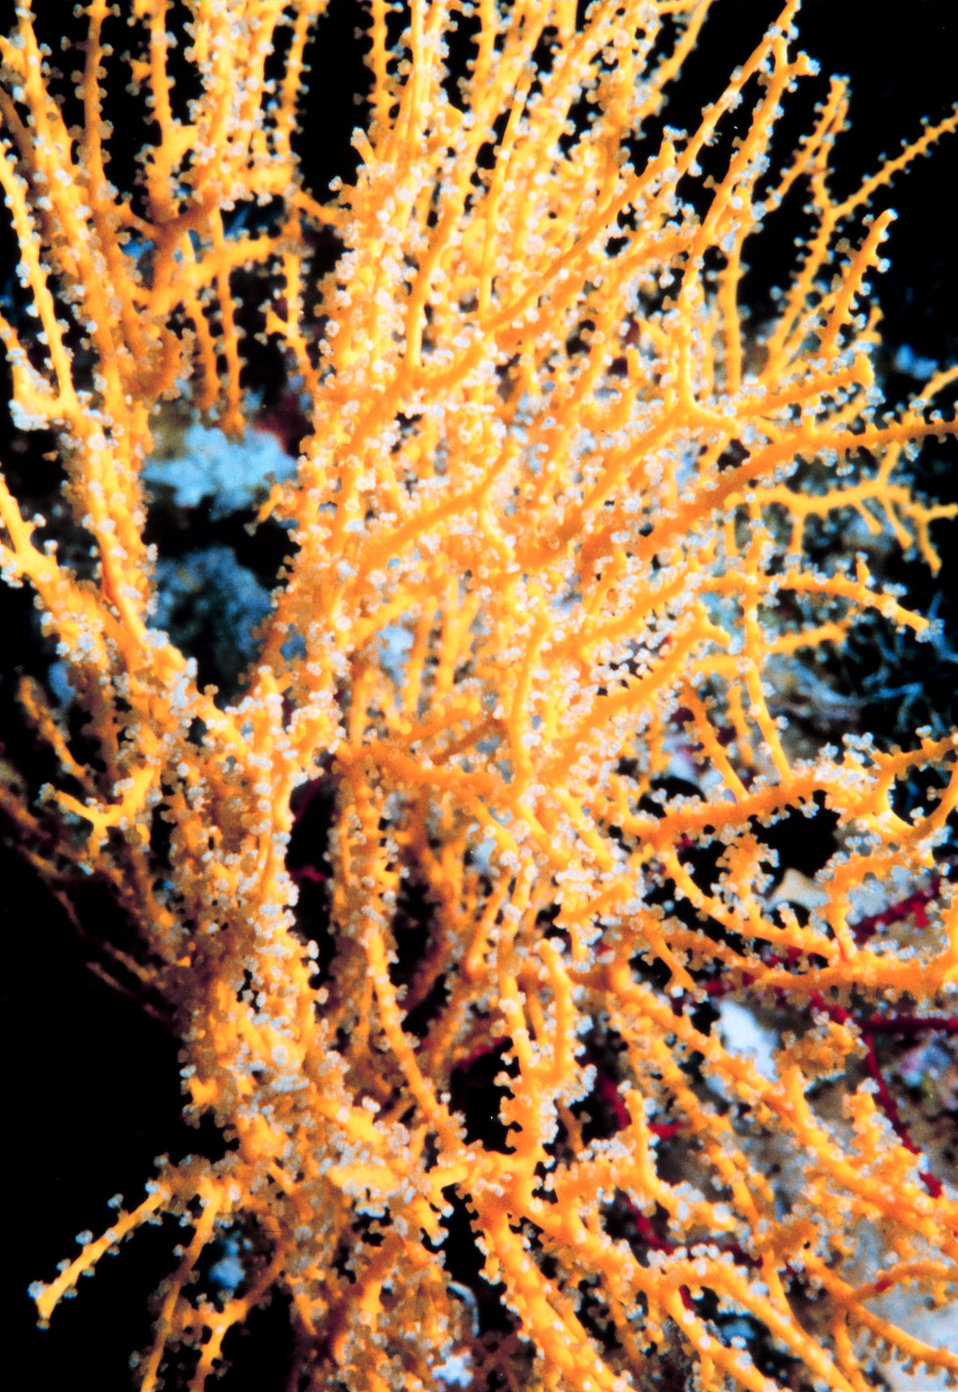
Yellow gorgonian